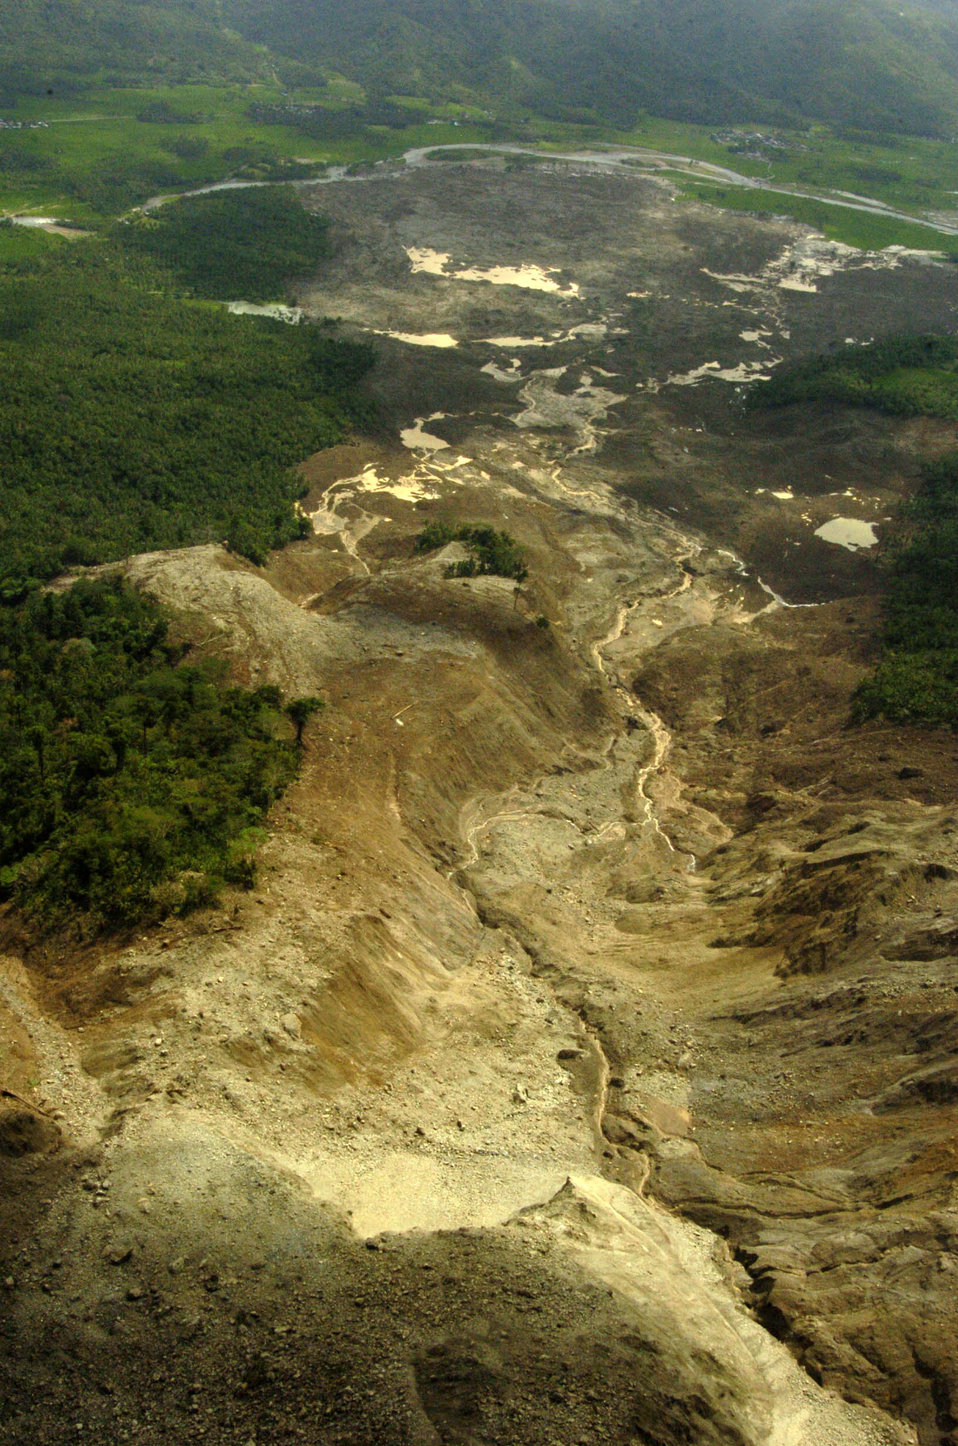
Philippine landslide relief

Leyte, PHILIPPINES (AFPN) -- An aerial photo taken from a Marine CH-46E Sea Knight helicopter shows the countryside destroyed by a landslide in Leyte, Philippines. The Sea Knight is with the USS Essex, which is off the coast providing humanitarian aid and assistance to relief efforts.